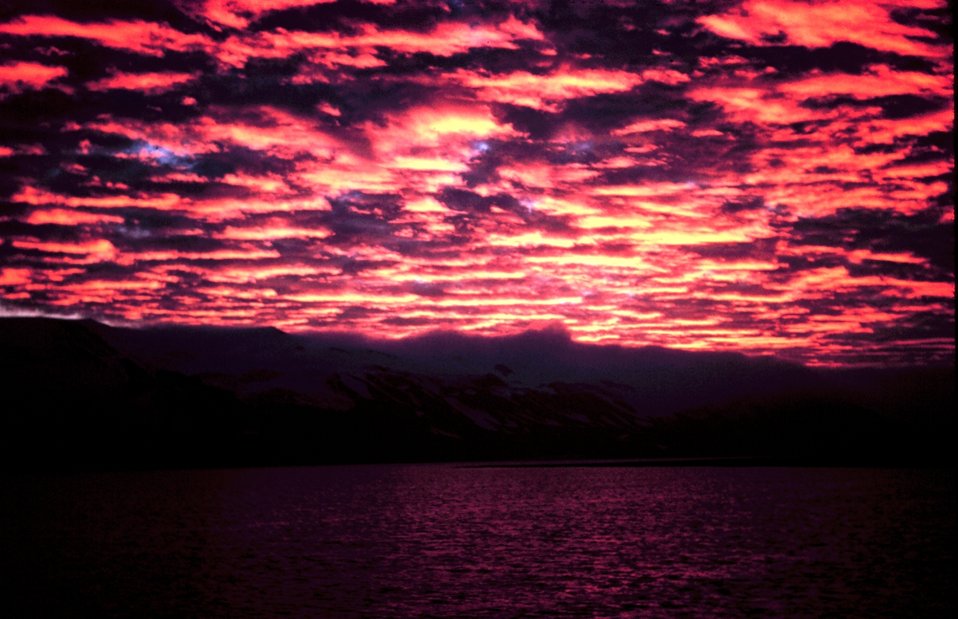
A sunset in Antarctic Sound